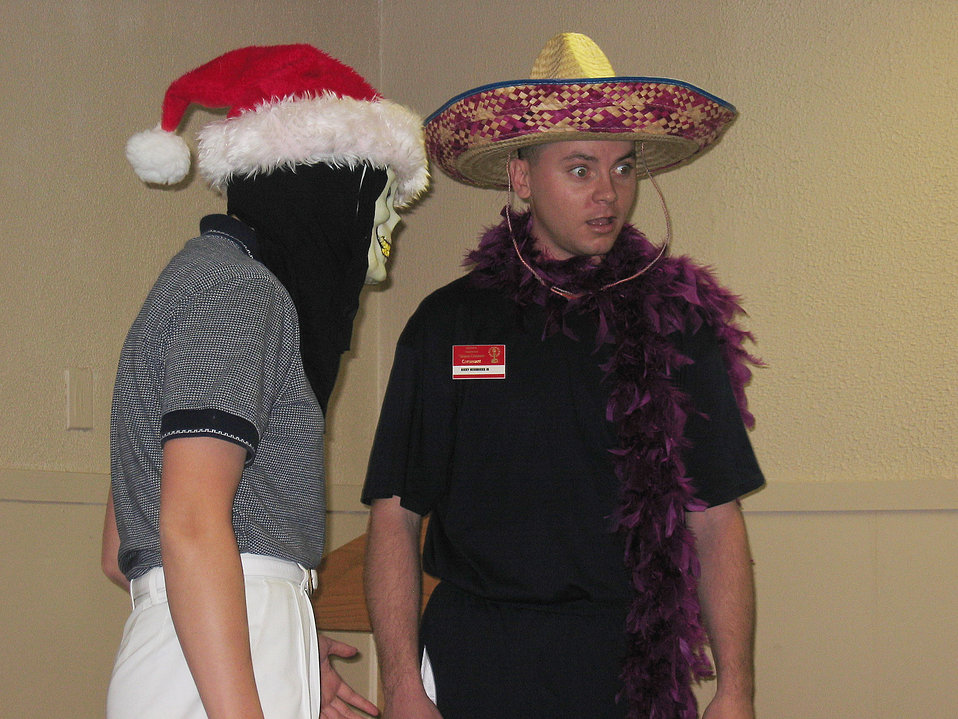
Talent showcase

LACKLAND AIR FORCE BASE, Texas -- Staff Sgt. Ricky Hendricks Jr. (right) performs a skit with a Tops in Blue member